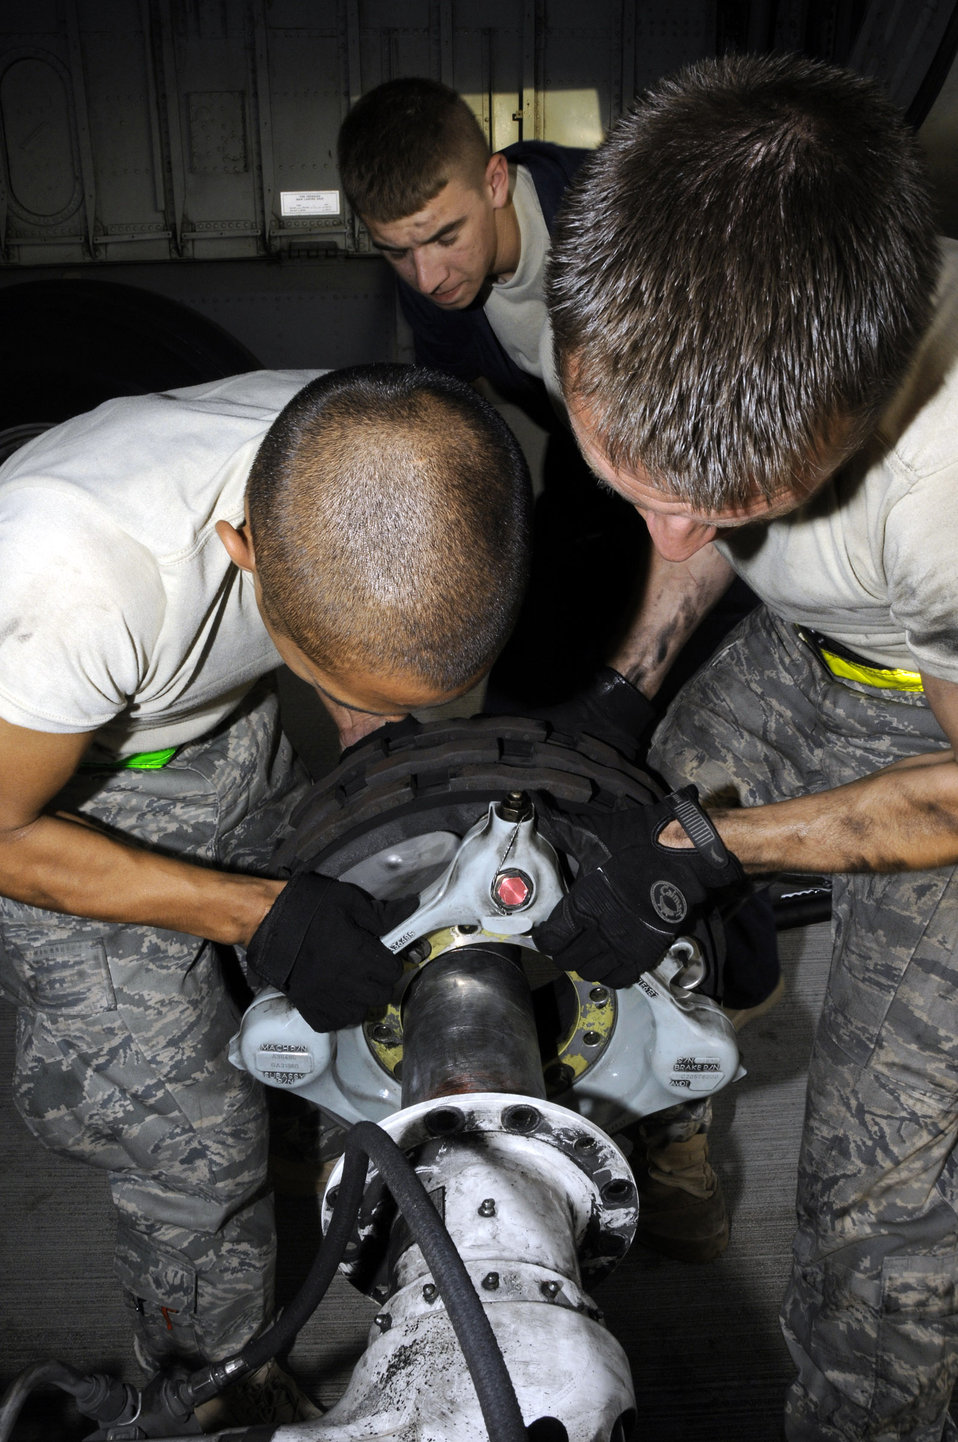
Brake it down

Tech. Sgt. Chris Reiter and Airman 1st Class James Giesick lift a new brake unit onto a KC-135 Stratotanker landing gear axle as Airman 1st Class Ryan McMillen assists Sept. 28 at an air base in Southwest Asia. The brake set had to be replaced when a crack in the heat shield was detected during a post-flight inspection. Sergeant Reiter, a native of Farmington, N.M., is deployed from Fairchild Air Force Base, Wash. Airman McMillen is from Warsaw, Ill., and deployed from McConnell AFB, Kan. Airman Giesick, originally from San Diego, is deployed from Grand Forks AFB, N.D. All are assigned to the 379th Expeditionary Aircraft Maintenance Squadron.